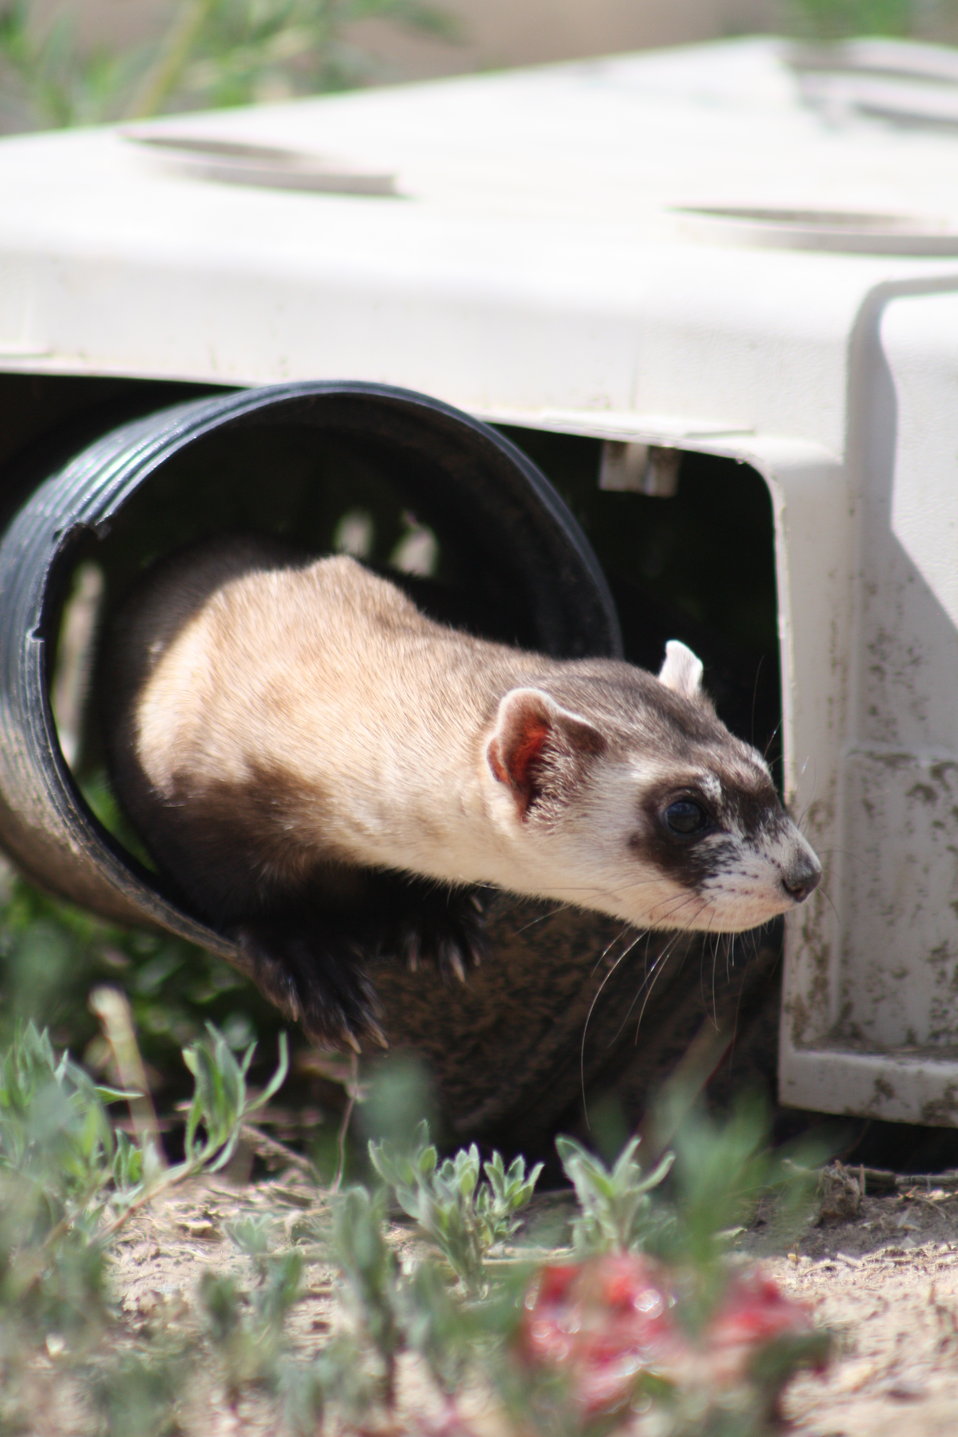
Interns visit the NBFFCC

In the summer of 2012, USFWS Region 6 interns visited the National Black-footed Ferret Conservation Center (NBFFCC) in Colorado to learn how the program reintroduces the endangered Black-footed ferret back into its native habitat.